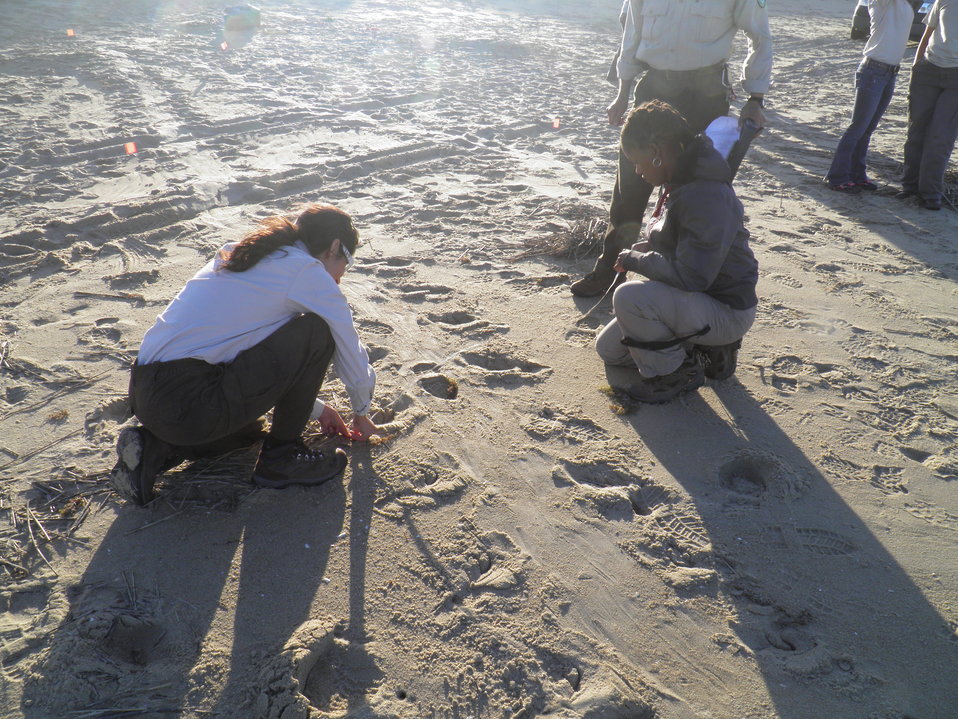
Measuring width of the tracks

Credit: USFWS
Crawl 3, Nest 3